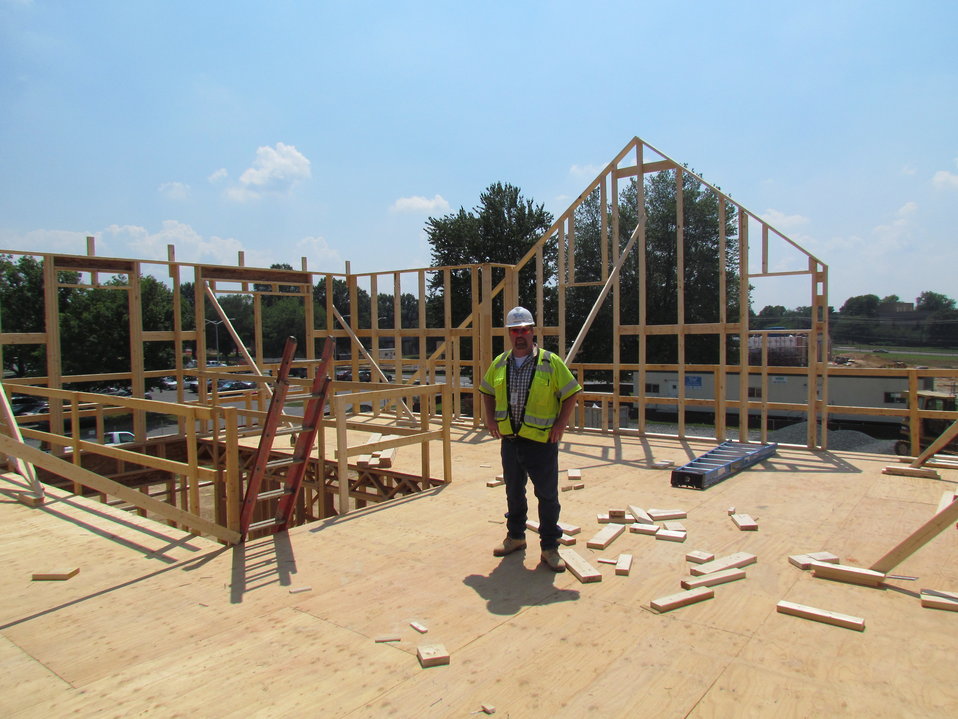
Net-Zero Energy Residential Test Facility - Picture showing construction foreman, Kevin Gallagher, standing on second floor subfloor.